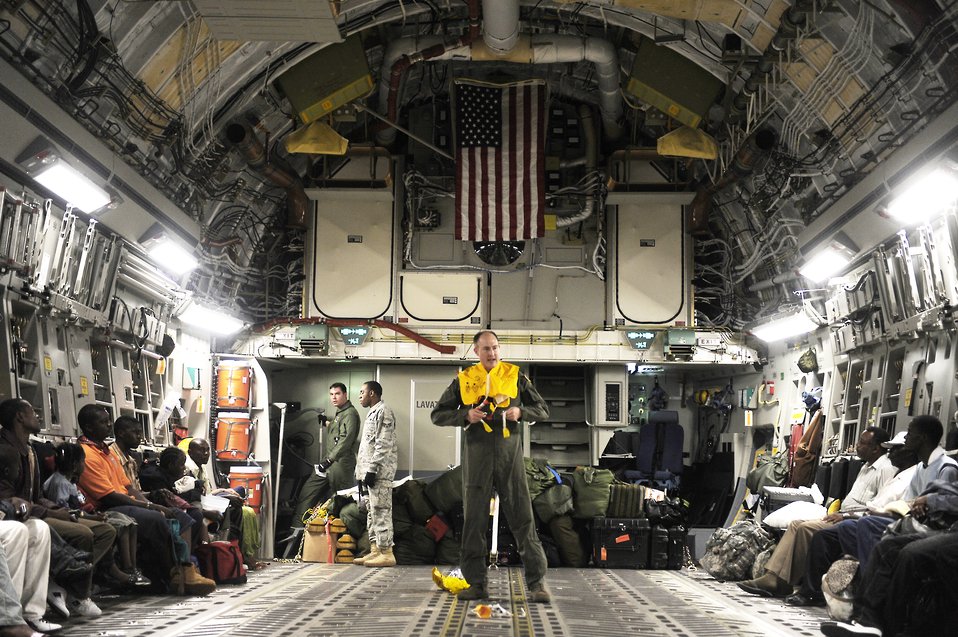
Returning

Staff Sgt. Eric Morris performs a preflight safety briefing for U.S. citizens in Haiti leaving on a C-17 Globemaster III Jan. 20, 2010 in Port-au-Prince, Haiti. The sergeant is a loadmaster with the 4th Airlift Squadron at McChord Air Force Base, Wash.